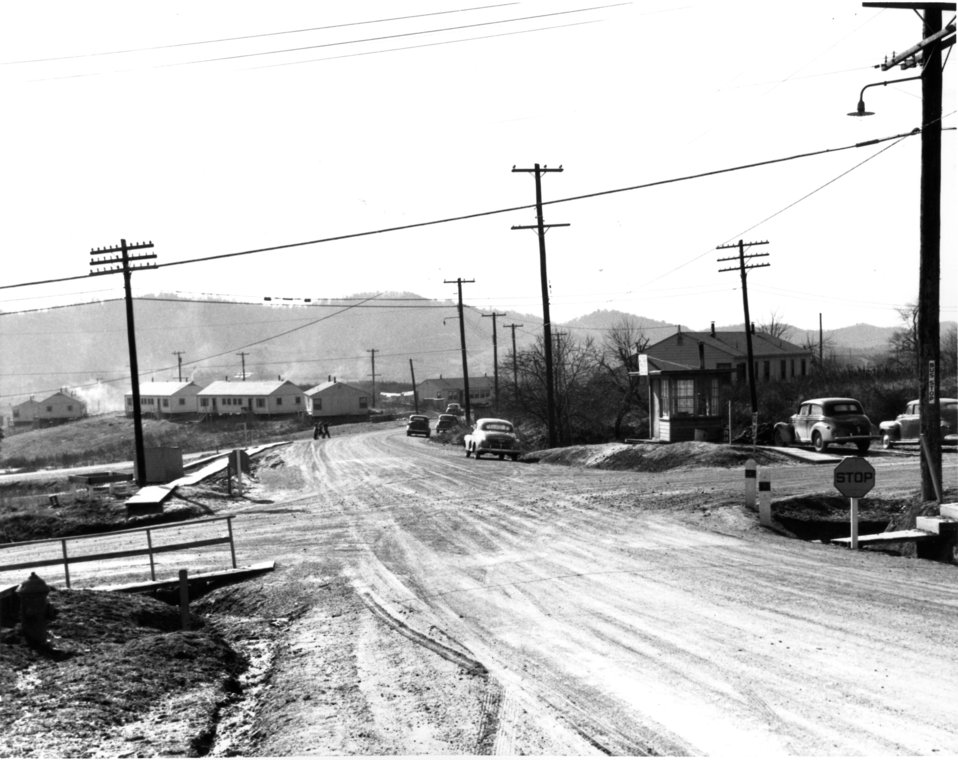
Medical at Oak Ridge